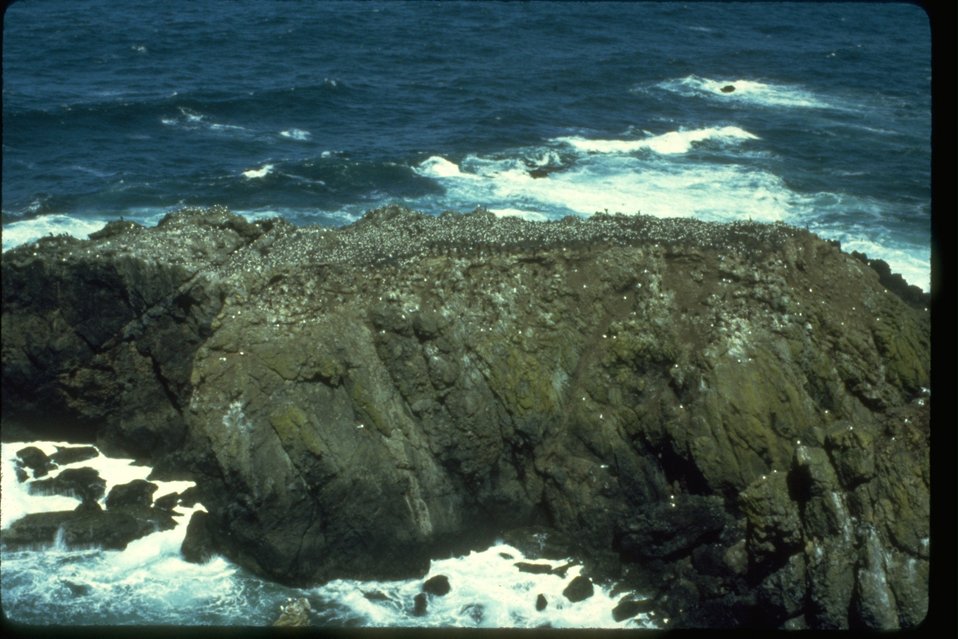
Aerial view of Colony Rock.